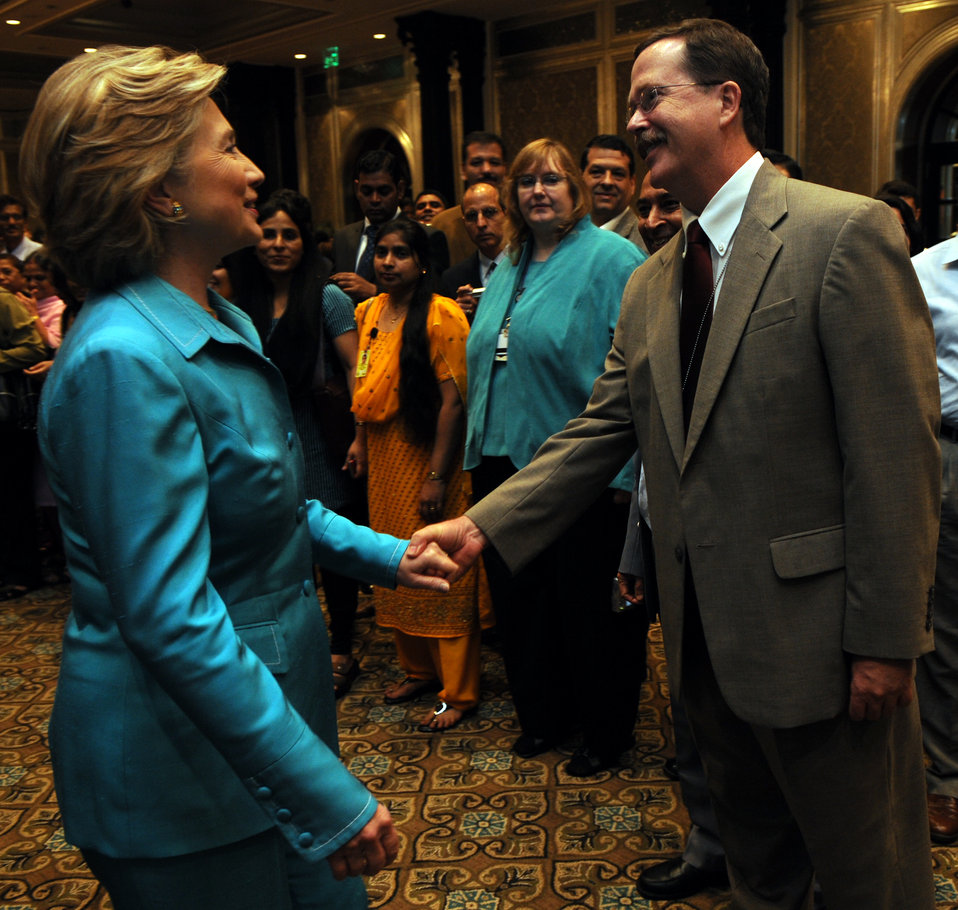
Secretary Clinton Addresses Mumbai Consulate Staff

U.S. Secretary of State Hillary Rodham Clinton greets Consular Chief David Tyler along with Consulate General staff at the Taj Palace Hotel in Mumbai, India July 19, 2009.